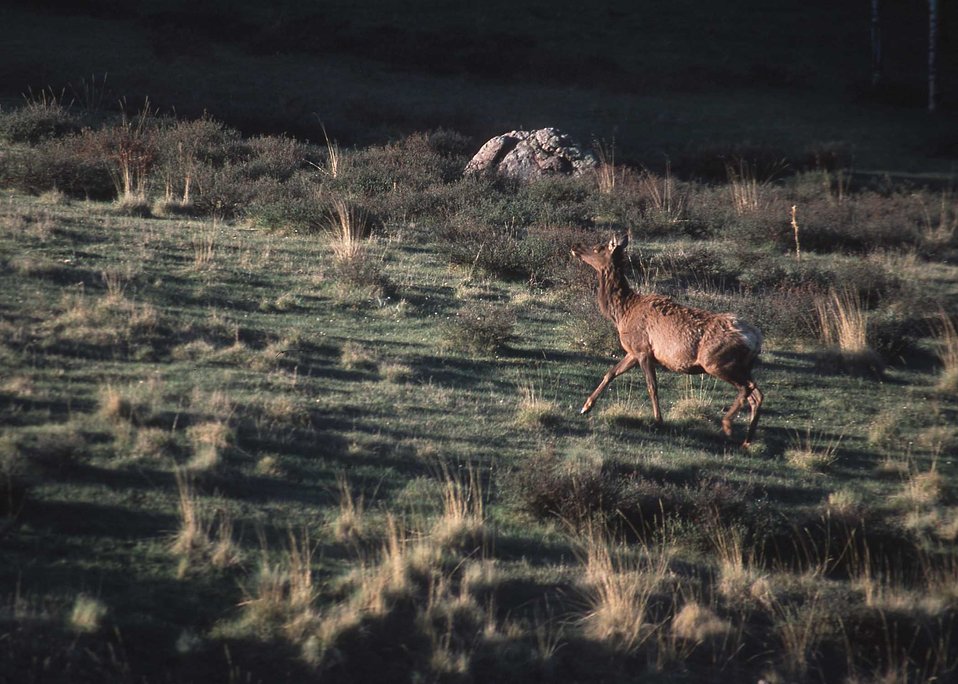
Elk migrating to higher elevations in spring on an elk ranch in northern New Mexico.